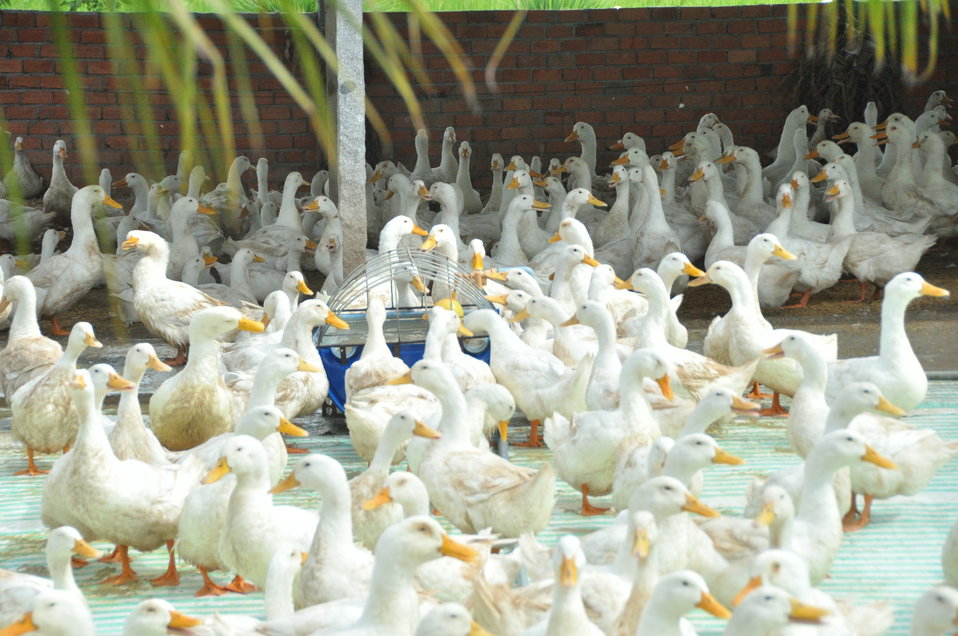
Duck farm in Can Tho

USAID Vietnam